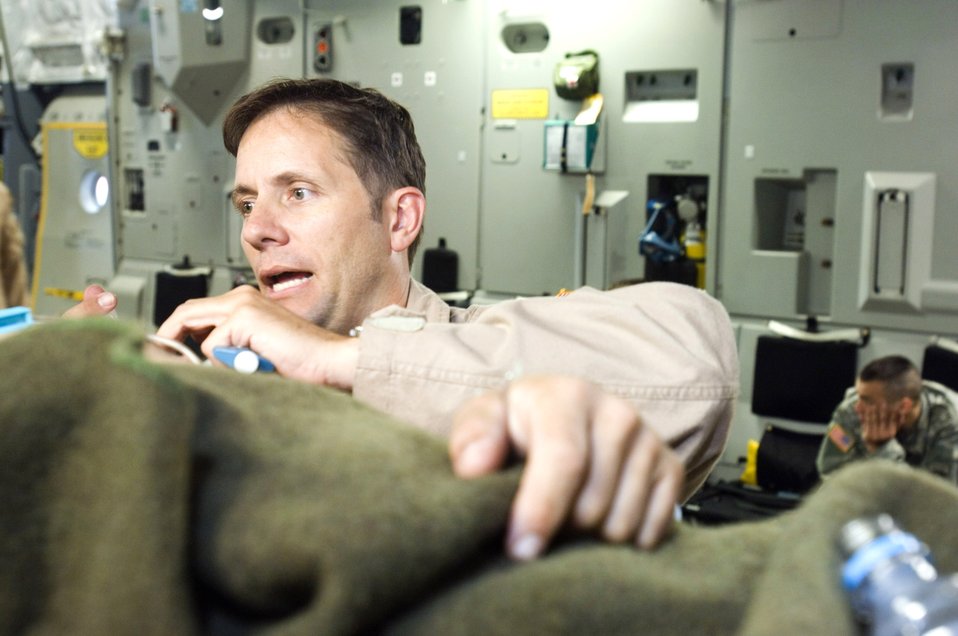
Aeromedical evacuation mission

First Lt. John Rinaldo administers medicine during an aeromedical evacuation mission Sept. 18 aboard a C-17 Globemaster III. Lieutenant Rinaldo is a flight nurse serving temporary duty with the 791st Expeditionary Aeromedical Evacuation Squadron at Ramstein Air Base, Germany.